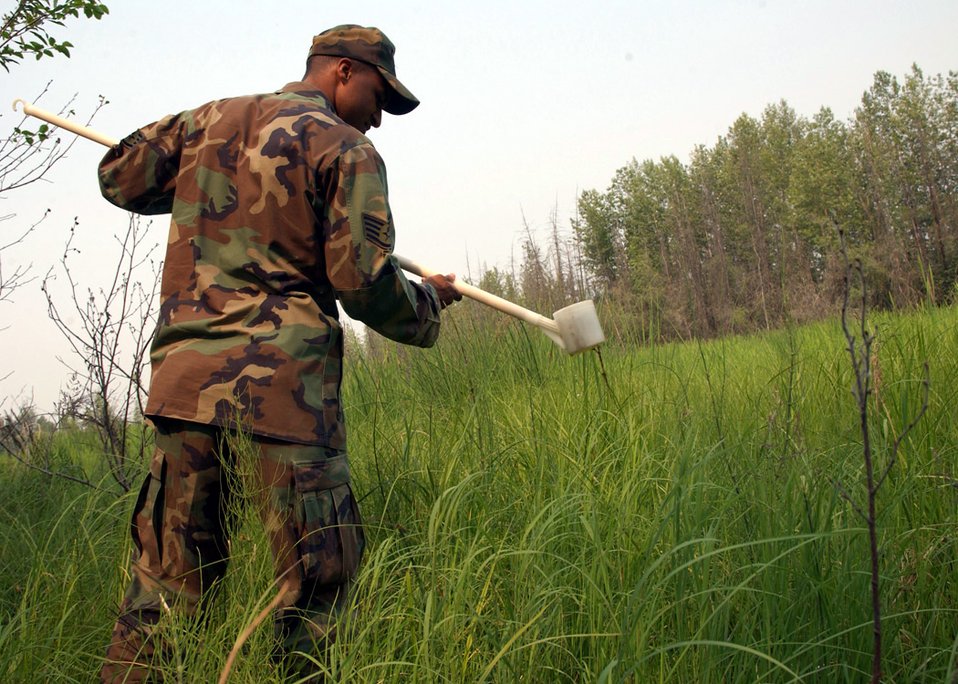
Bugging out

EIELSON AIR FORCE BASE, Alaska -- Staff Sgt. Christopher Beach gathers mosquito larva near base housing here June 28. The 354th Civil Engineer Squadron pest management section's Airmen use biological, mechanical and cultural methods to deter and catch pests around base.